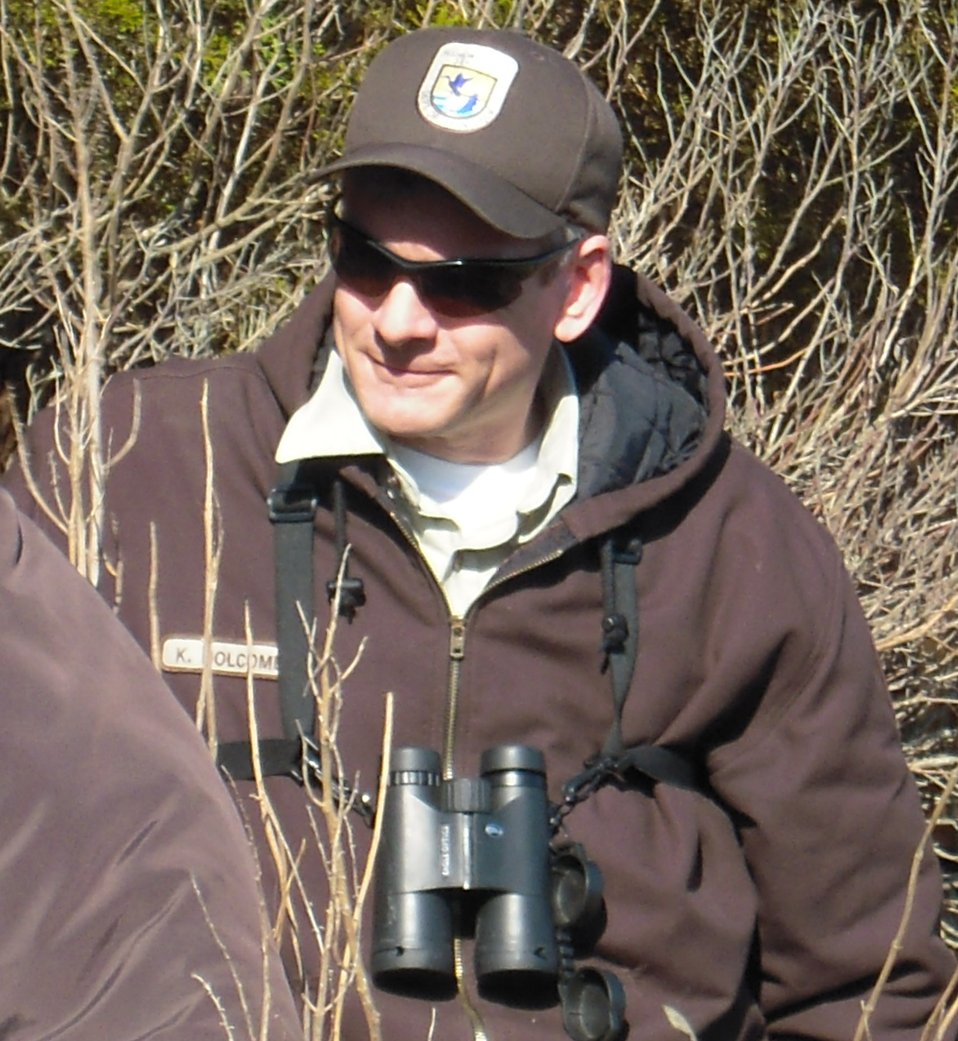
Kevin Holcomb, Wildlife Biologist at E.B. Forsythe NWR, conducts salt marsh field work.